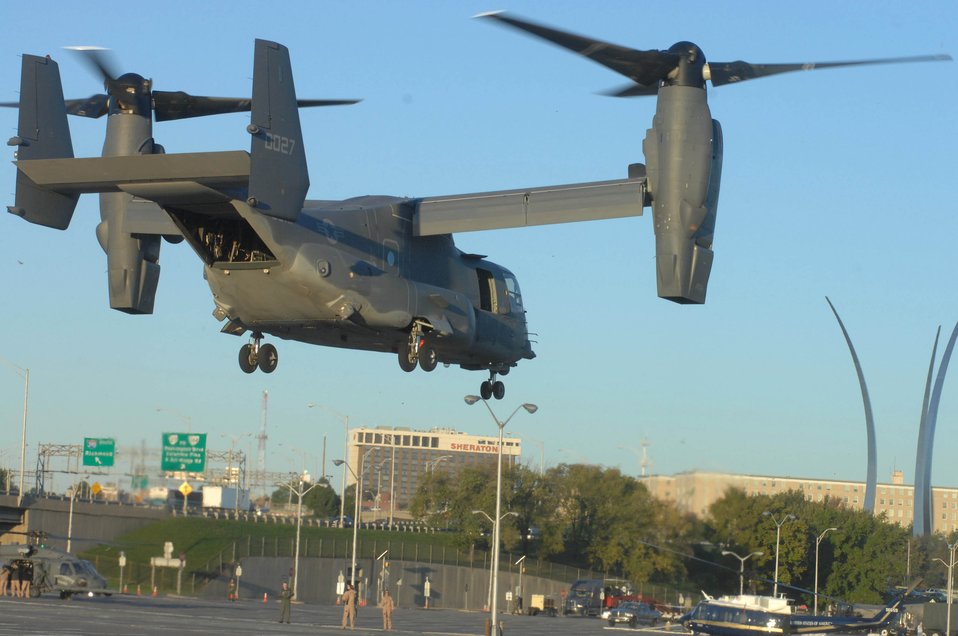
CV-22 Osprey flyover at Air Force Memorial

A CV-22 Osprey tilt rotor aircraft flies lands at the Pentagon Oct. 13 in Arlington, Va. Aircraft including the CV-22 are landing at the Pentagon south parking lot and will be on display during the Air Force open house for the opening ceremonies of the Air Force Memorial Oct. 14.